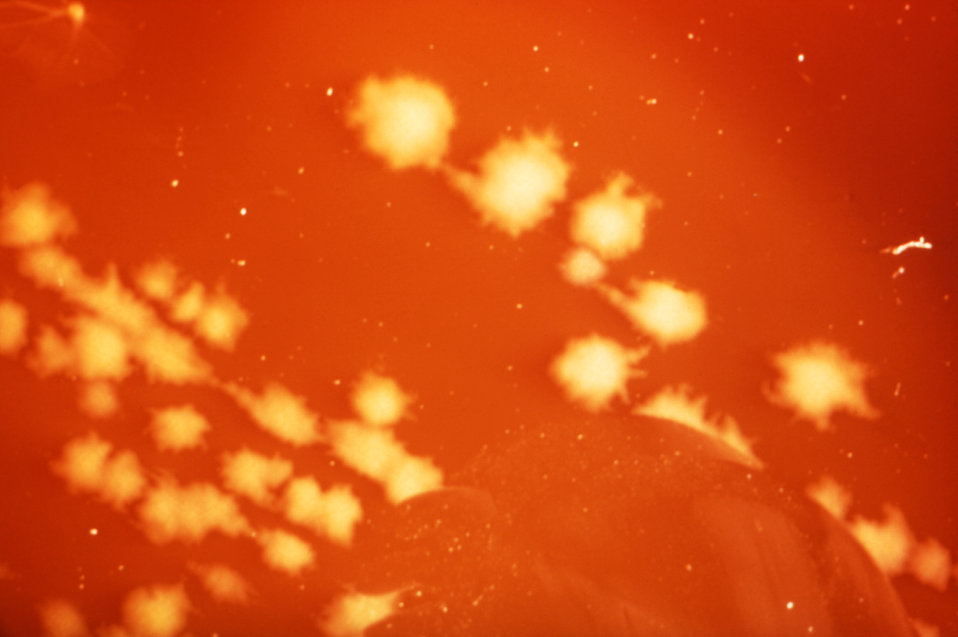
Under only a 2X magnification, this photograph revealed some of the details displayed atop a Petri dish culture of rod-shaped, Gram-positive Clostridium septicum bacteria.